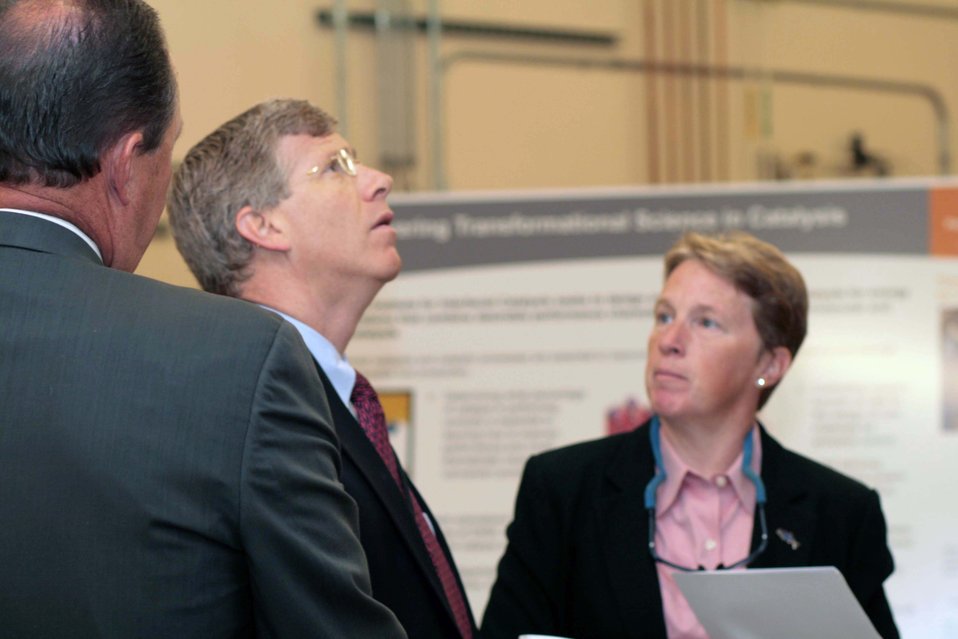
P-12